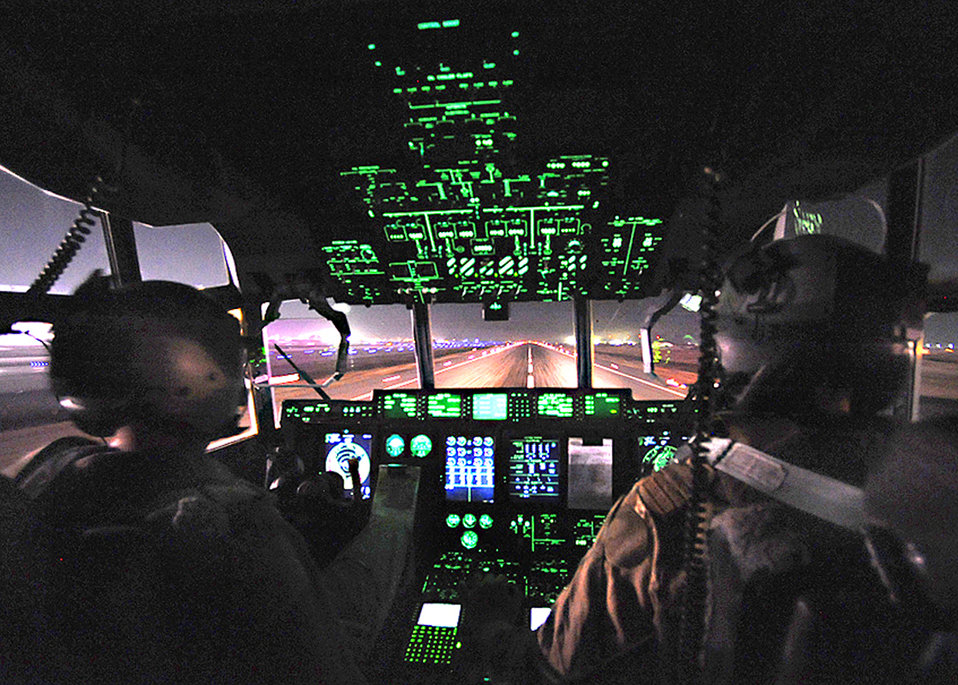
All systems go

Capt. Dave Paland (left) and Canadian air force Capt. Ryan Peters land a C-130J Super Hercules to drop off cargo and passengers during a routine mission Jan. 6, 2010, at Bagram Airfield, Afghanistan. Both pilots are assigned to the 772nd Expeditionary Airlift Squadron.